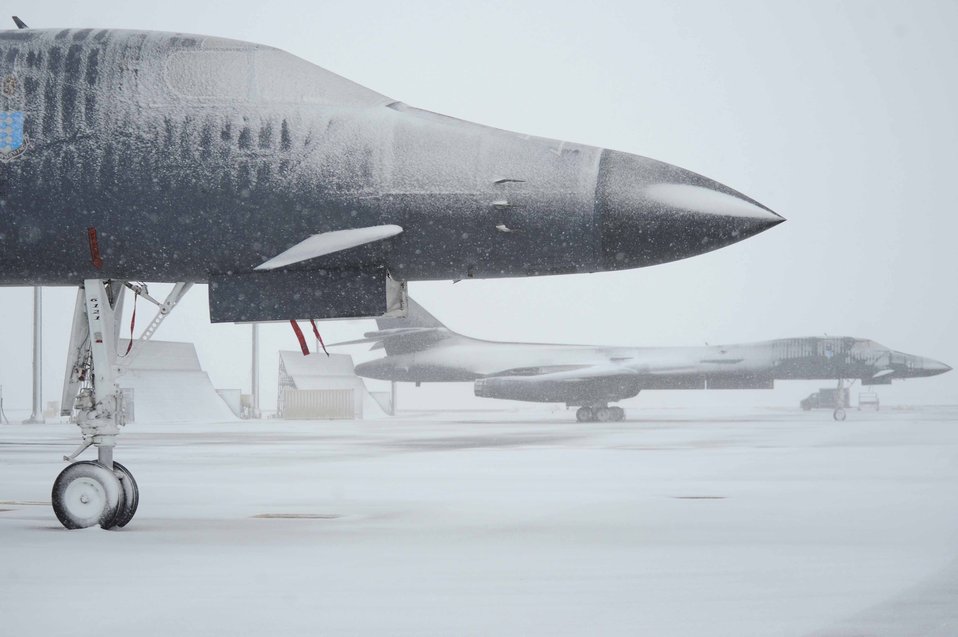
Cold and snow no obstacle for Ellsworth maintainers

The first big snowfall of the winter season covers B-1B Lancers on the Ellsworth Air Force Base, S.D. flightline Oct. 29, 2009. The B-1 serves as the supersonic component of the Air Force's long-range bomber force, along with the subsonic B-52 Stratofortress and B-2 Spirit.